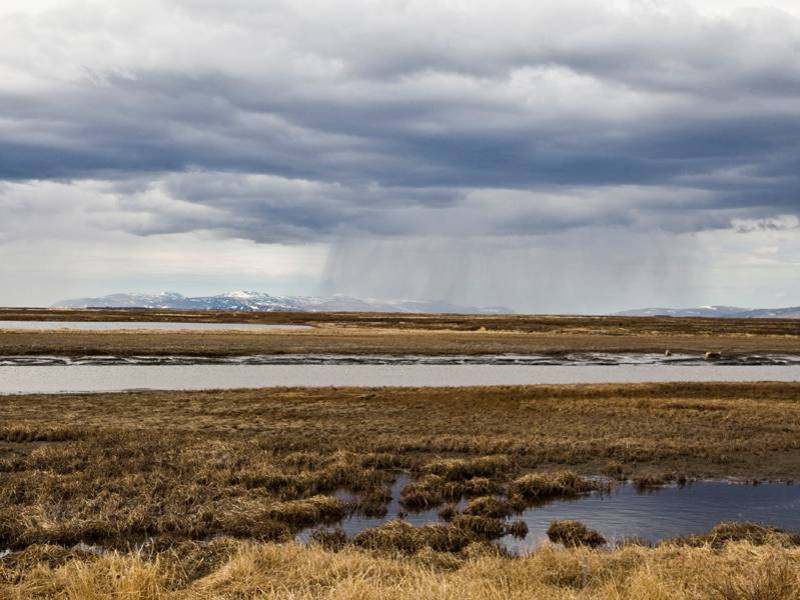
Yukon rain shower

Yukon Delta National Wildlife Refuge, AK